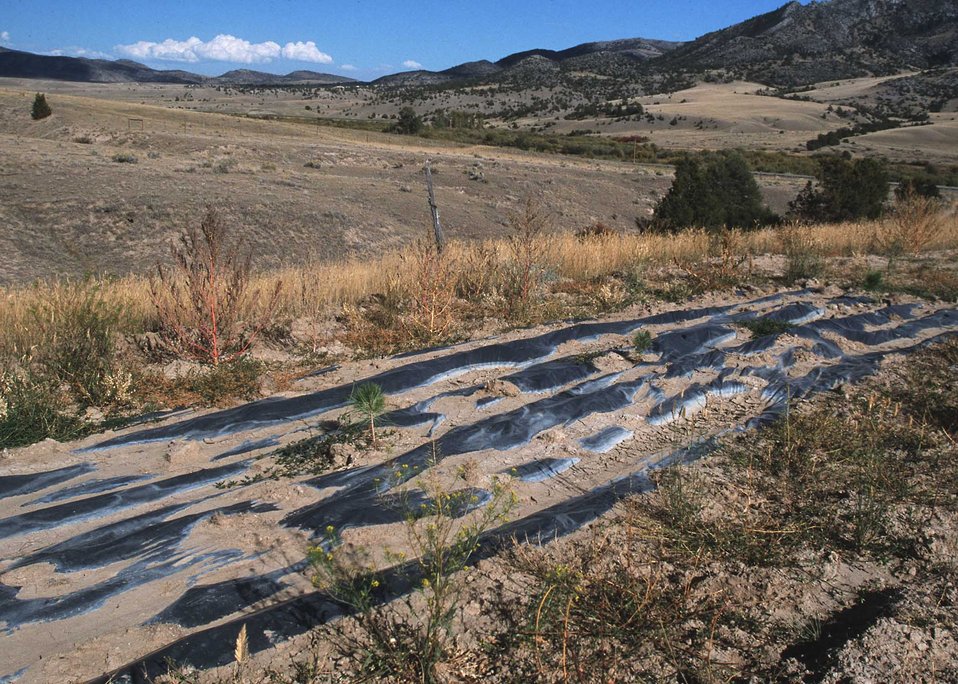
Windbreak planting along the edge of a field.